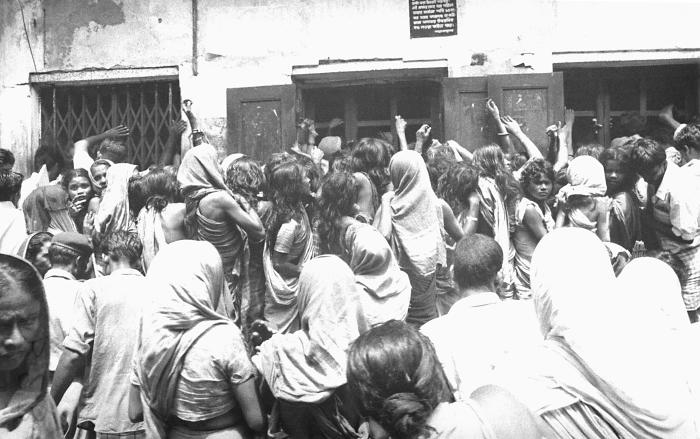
Though this image was taken in the 1970s, Bangladesh was, and still is one of the poorest countries in the world. This photograph depicted a disorganized mass of people awaiting relief supplies during a time of famine. This image was part of a series provided by Dr. Stan Foster, and captured by Pierre Claquin, M.D., B.A.C., who at the time was a member of the World Health Organization's Smallpox Eradication Program. It was part of a series photographed by former E.I.S. officer, Stanley O. Foster M.D., M.P.H., and was one of a series entitled 'The Story of One Smallpox Jeep', which depicted the travails faced by the jeep, and its occupants of public health practitioners, as they road through the Bangladesh countryside in an attempt to eradicate smallpox from the country.